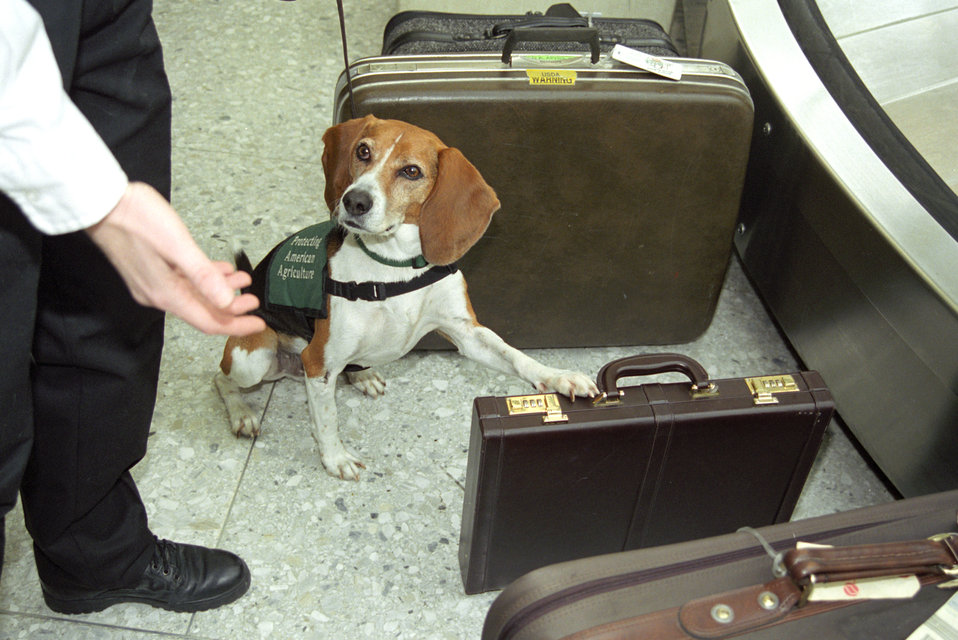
This beagle signals that a piece of luggage contains contraband at Washington Dulles International Airport in Chantilly, VA on March 14, 2001. The Beagle Brigade is a team of beagles and their human handlers who, as part of the U.S. Department of Agriculture's (USDA) Animal and Plant Health Inspection Service (APHIS) inspect luggage at U.S. airports searching for agricultural products. The Beagle Brigade program averages around 75,000 seizures of prohibited agricultural products a year. Unauthorized meat, animal byproducts, fruit and vegetables can carry diseases and pests that have the potential to infect U.S. agriculture. APHIS works in conjunction with the U.S. Customs and Border Protection and the U.S. Public Health Service at entry points to the U.S., including land borders, ports and airports. The Beagle Brigade generally works in the baggage-claim area at international airports. After 911, the Beagle Brigade is under the authority of Homeland Security.